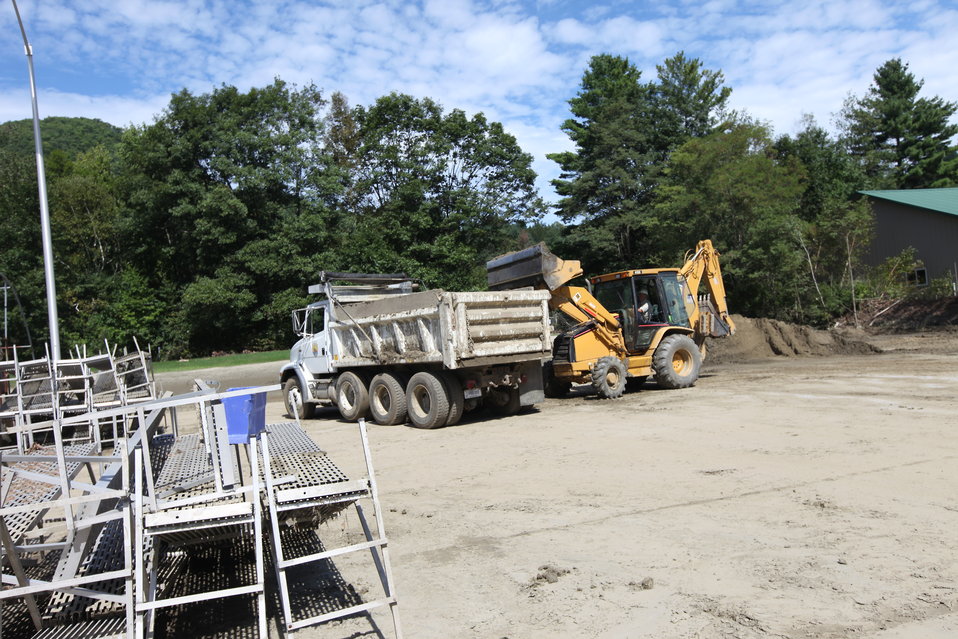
Storm damage relief at White River NFH

Heavy equipment operators came from other USFWS stations to help clean up.